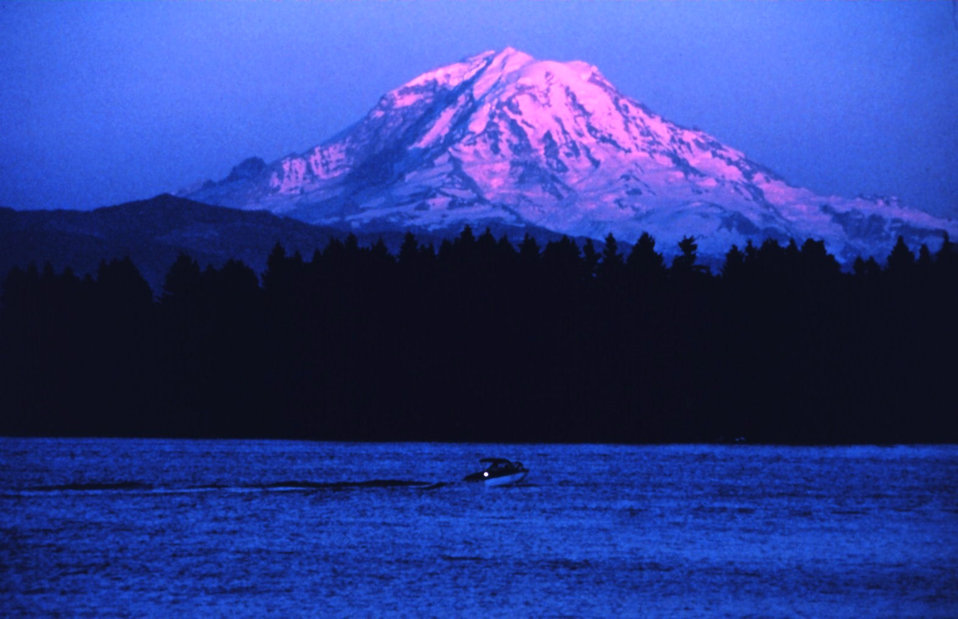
Mount Rainier at sunset.